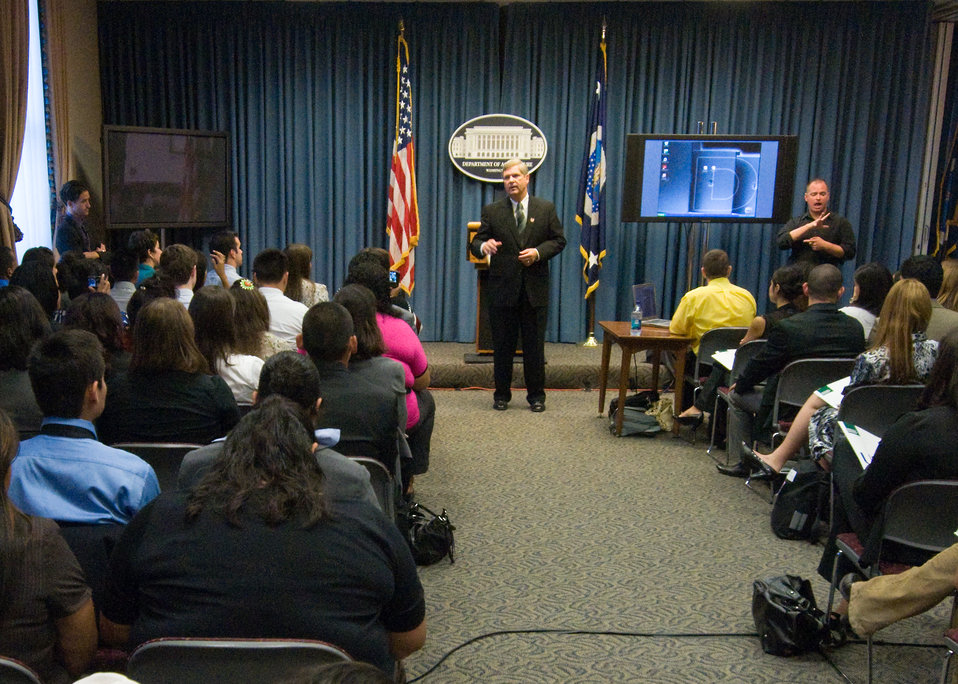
Agriculture Secretary Tom Vilsack was the keynote Speaker at the USDA HACU and 1994 Tribal College Summer Internship Orientation Program at the Department of Agriculturein Washington, DC, Monday, June 7, 2010. USDA Photo 10di1390-7.